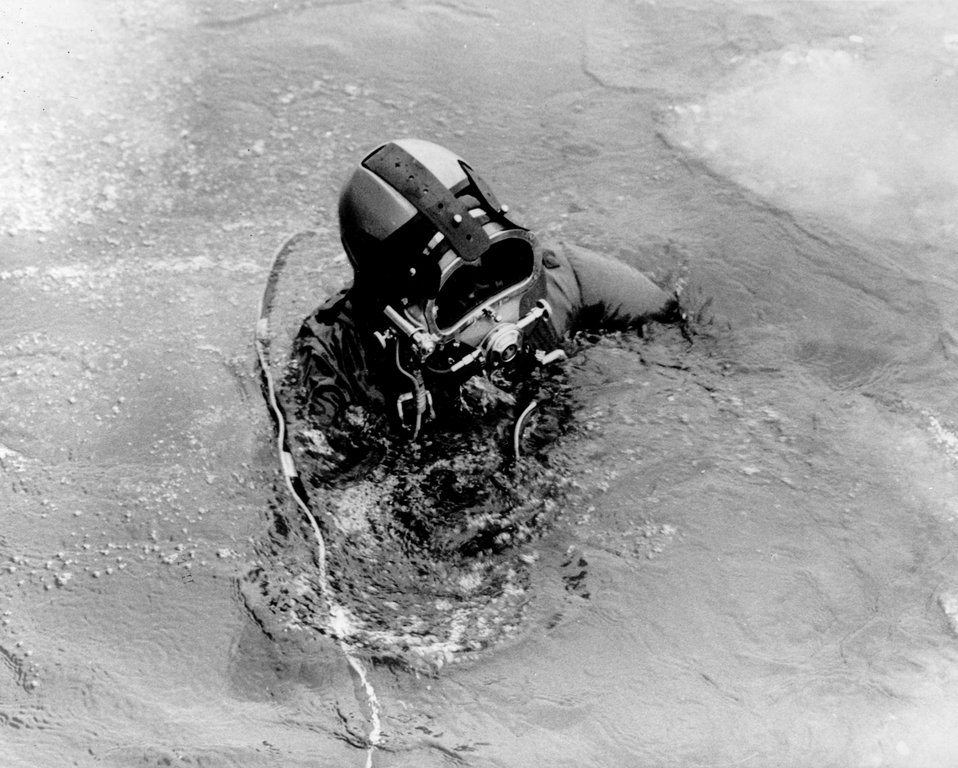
Bob Anderson, a U of Michigan diver, prepares to submerge through 'slush ice' in the frigid waters of Lake Michigan, to direct the placement of temperature recording instruments on the boulder strewn bottom.
c.1972